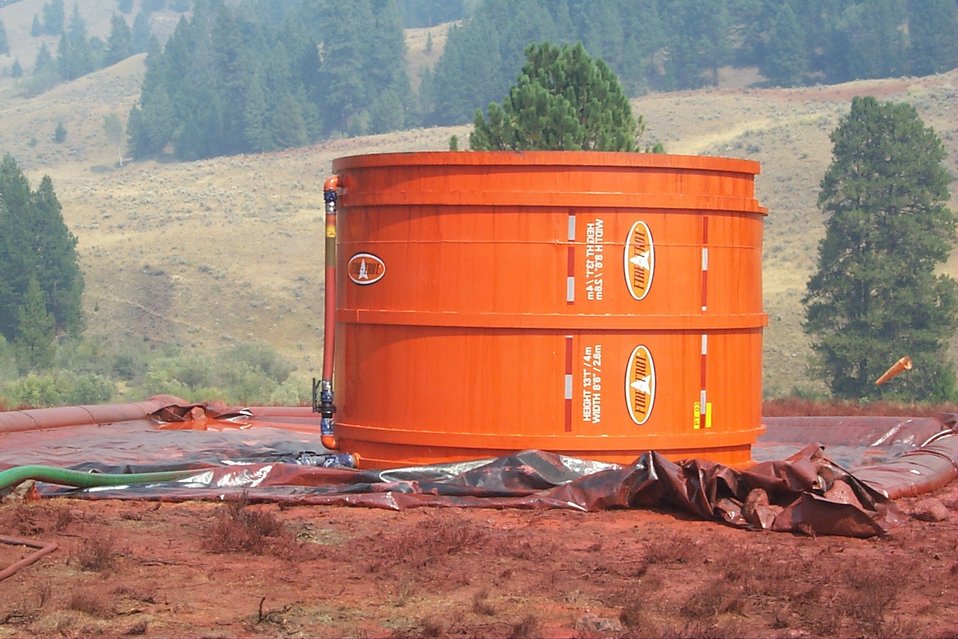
Field water storage Fire Clearwater Fire Salmon Field Office USRD Upper Snake River District